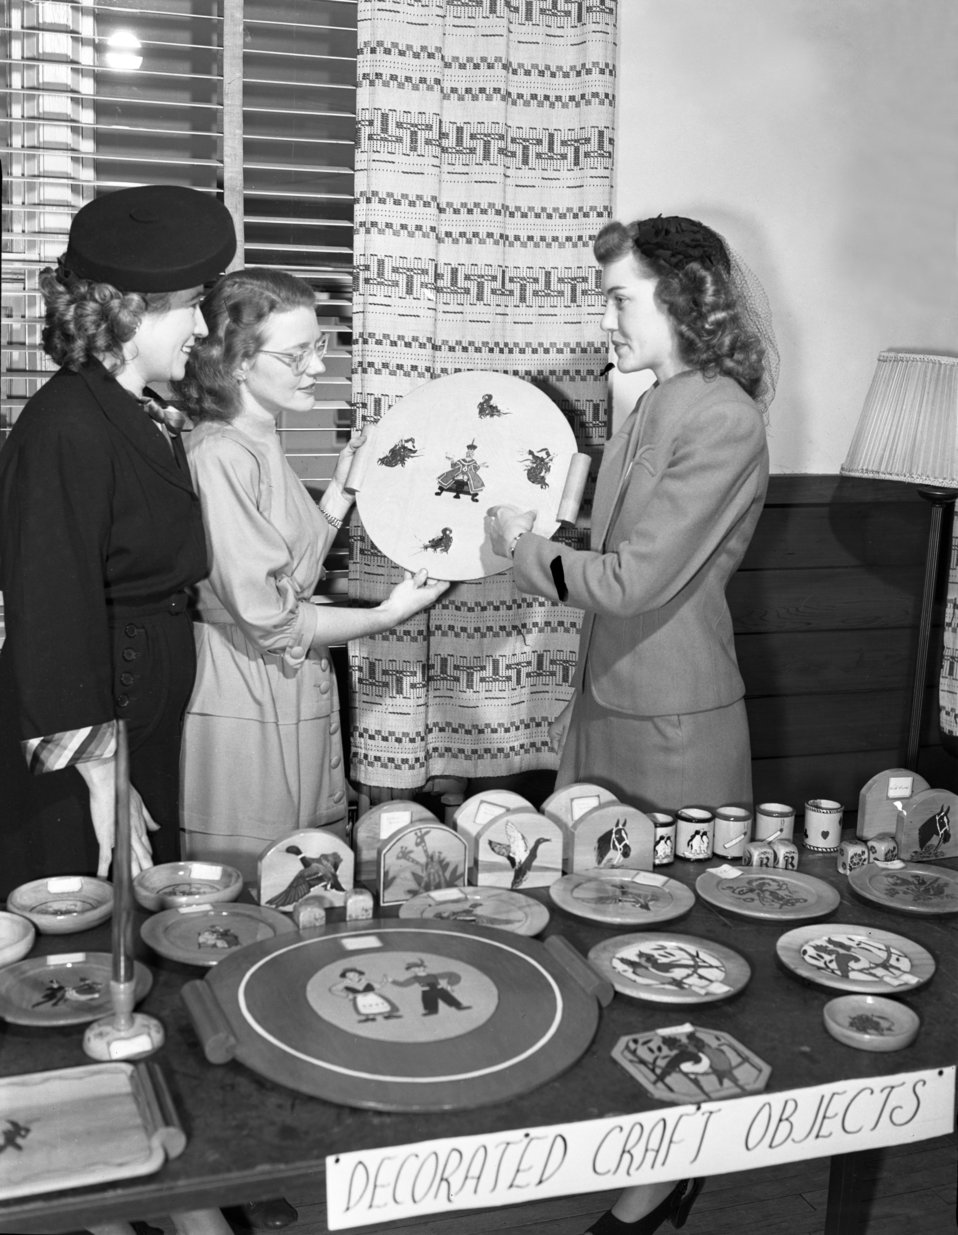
Arts and Crafts Oak Ridge 1947

3296-2a DOE photo Ed Westcott 2-14-1947 Oak Ridge Tennessee